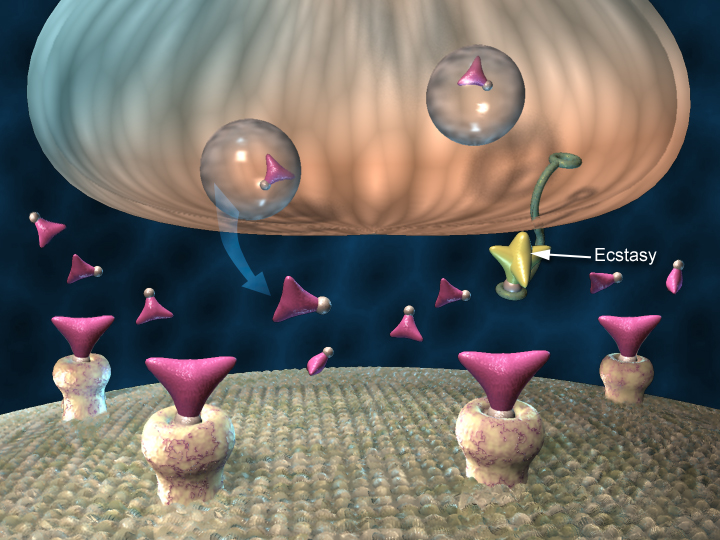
Ecstasy and serotonin transporters

When ecstasy binds to the serotonin transporters, more serotonin ends up in the synaptic space. This occurs for two reasons. First, ecstasy can prevent the transporters from carrying serotonin back into the terminal. Second, ecstasy can cause the transporters to work in reverse mode—they actually bring serotonin from the terminal into the synaptic space. So, more serotonin is present in the synaptic space and more serotonin receptors become activated. This is the major short-term effect of ecstasy that alters brain chemistry.